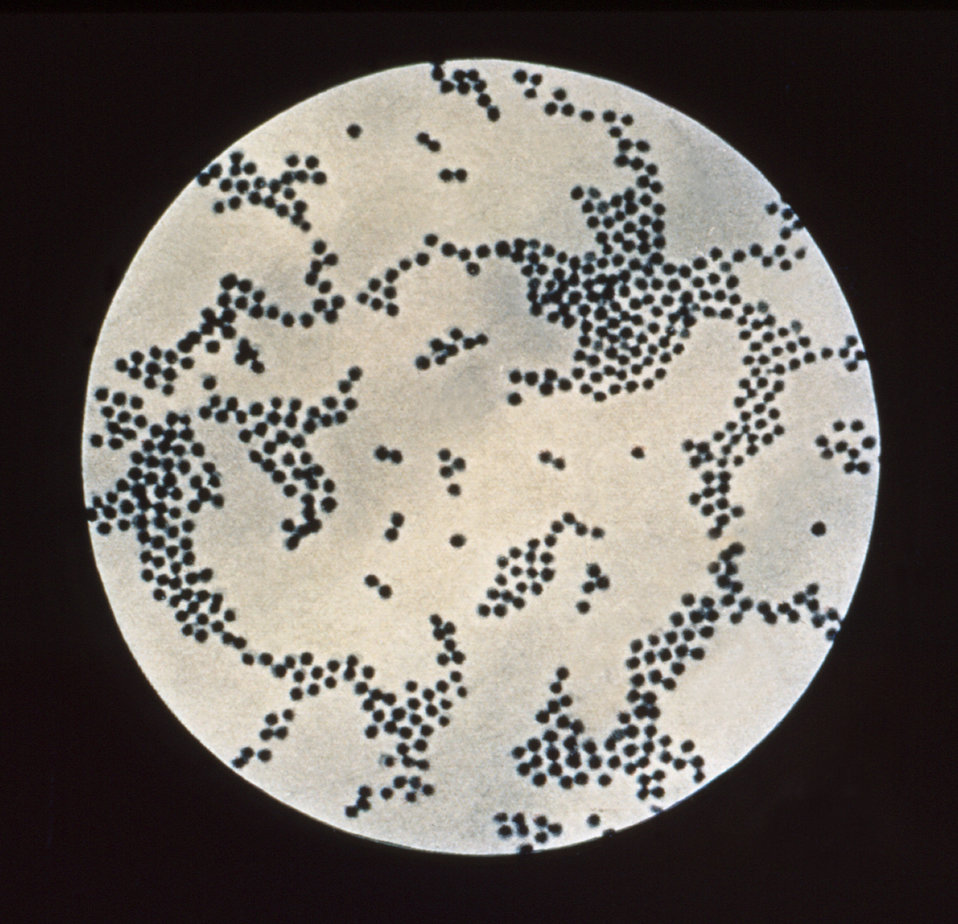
This methylene blue-stained micrograph shows Staphylococcus aureus bacteria, an organism linked to Toxic Shock Syndrome.